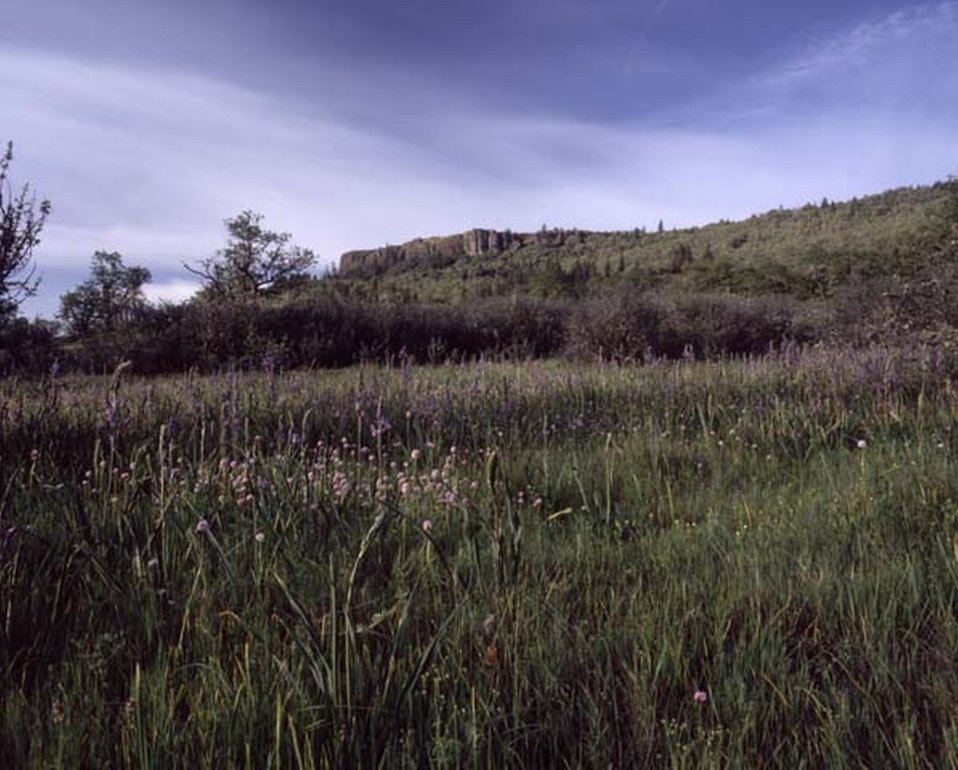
Far shot of Lower Table Rock.